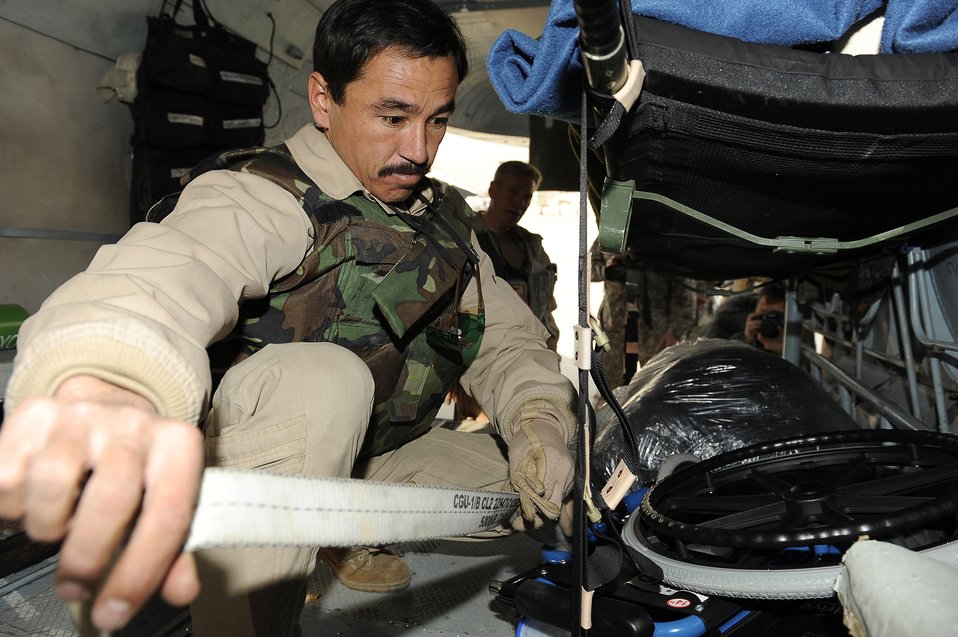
Afghan airman secures equipment to an Mi-17 helicopter

Afghanistan National Army Air Corp Sgt. 1st Class Ghulam Sakhi secures equipment to an Mi-17 helicopter for a medical evacuation Feb. 3, 2010, at Bagram Airfield, Afghanistan. Sergeant Sakhi is a flight medic with the 438th Air Expeditionary Advisory Group/Combined Air Power Transition Force.